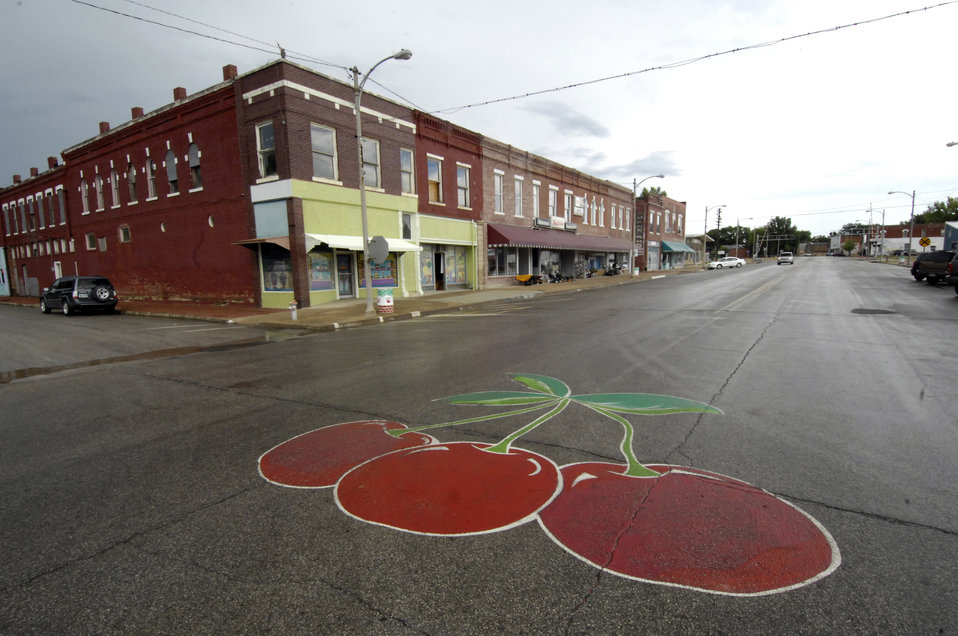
Cherries are painted on the main street of Cherryvale, Kansas on August 17, 2009. Cherryvale (population 2,386) was able to establish a Revolving Loan Fund acquired from the U. S. Department of Agriculture (USDA) Rural Development (RD) Rural Business (RB) service. The loan will help start-up businesses, provide financial assistance to emerging small businesses, assist businesses to make improvements, and create jobs in the community. Funding for the loan will be allocated through the American Recovery and Reinvestment Act of 2009 (ARRA).